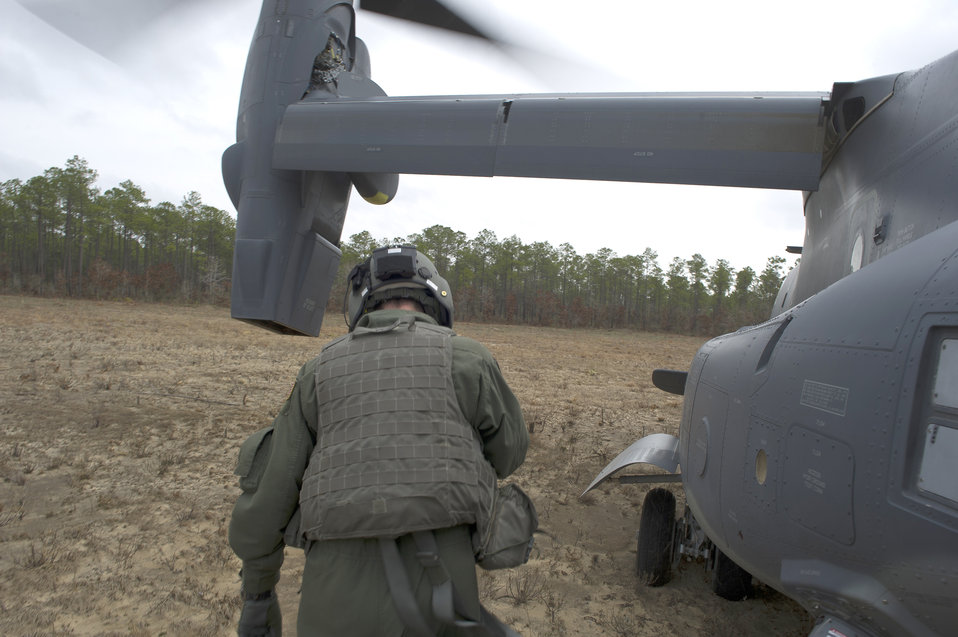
Osprey training mission

Master Sgt. John Rhoten inspects a CV-22 Osprey during a training mission Feb. 1, 2011, at Hurlburt Field, Fla. Sergeant Rhoten is a flight engineer assigned to the 8th Special Operations Squadron.